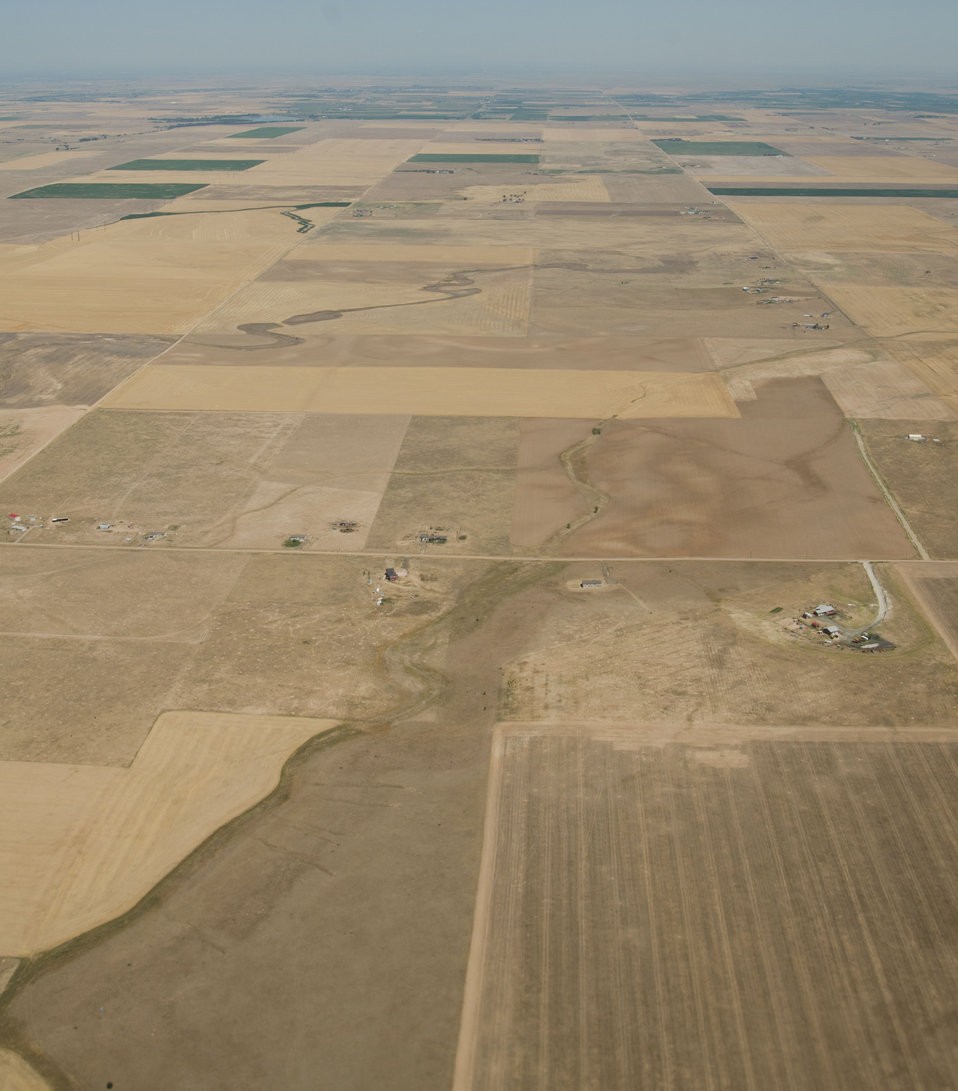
Aerial views of drought affected Colorado farm lands, 74 miles east of Denver, Colorado on Saturday, July 21, 2012.